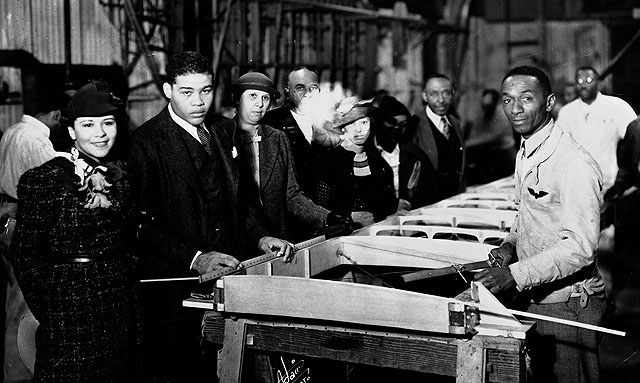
William J. Powell: Promoted African-American involvement in aviation

William J. Powell with world boxing champ Joe Lewis at Powell's aircraft building company.